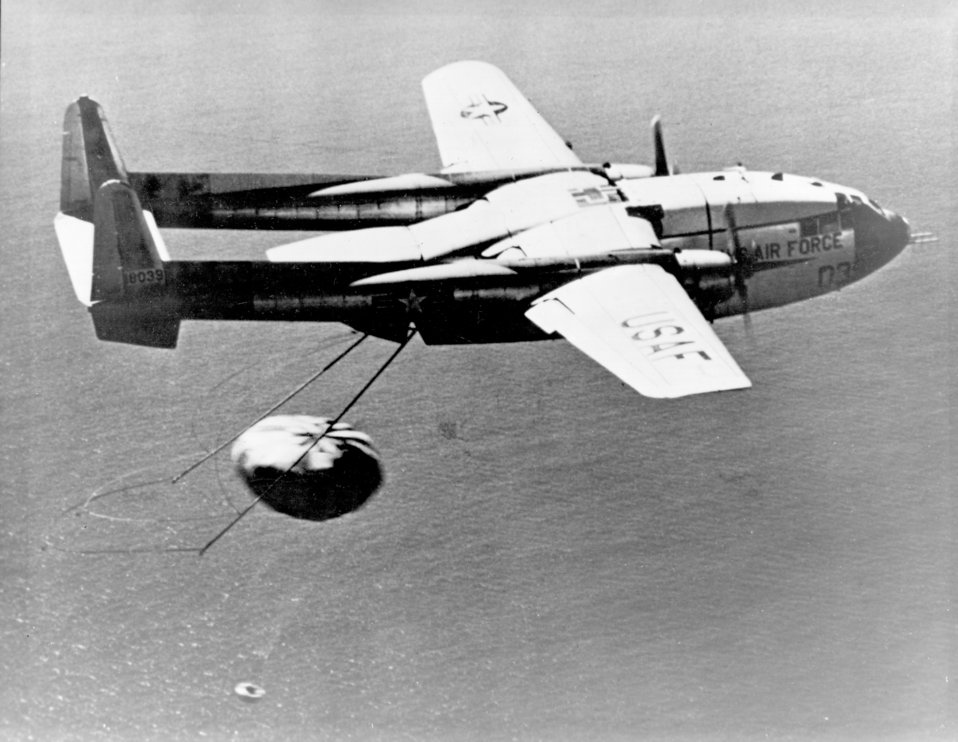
C-119J Flying Boxcar

On Aug. 19, 1960, a C-119J Flying Boxcar made the world's first midair recovery of a capsule returning from orbit when it